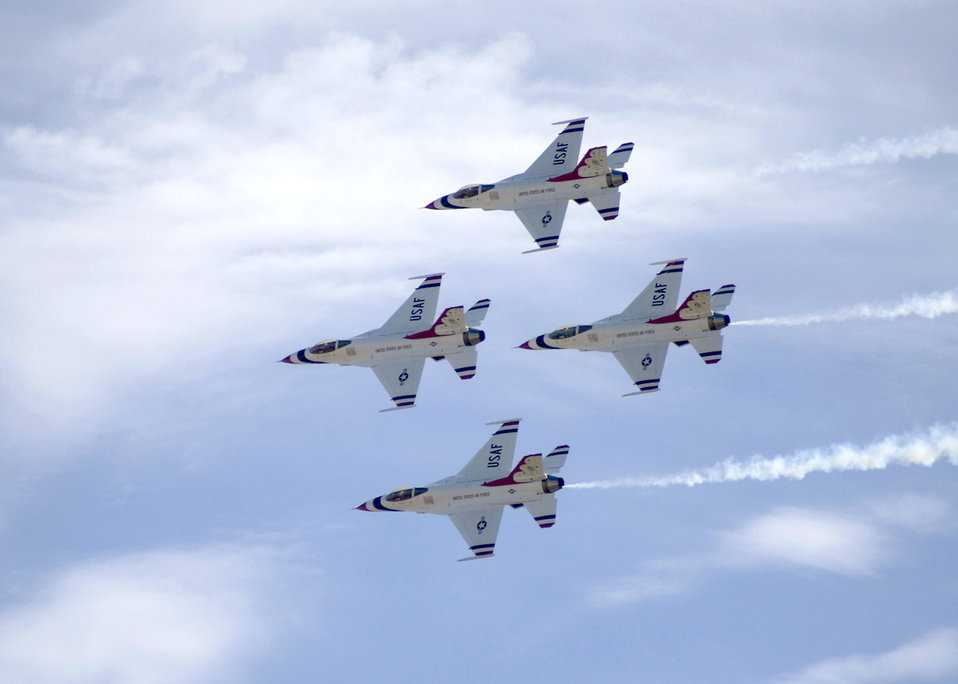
Thunderbirds

OVER DAVIS-MONTHAN AIR FORCE BASE, Ariz. -- The U.S. Air Force Thunderbirds flight demonstration team fly in diamond formation during the 2005 Aerospace and Arizona days here April 2. The Thunderbirds are assigned to the U.S. Air Force Air Demonstration Squadron at Nellis Air Force Base, Nev.